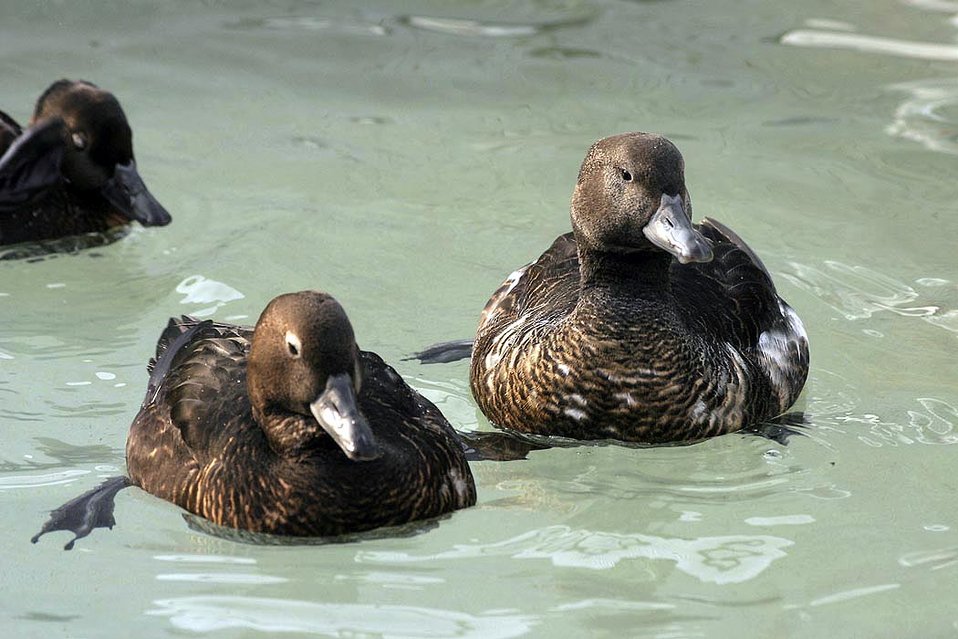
Threatened Steller's eider (Polysticta stelleri) females, Alaska SeaLife Center, Seward, Alaska